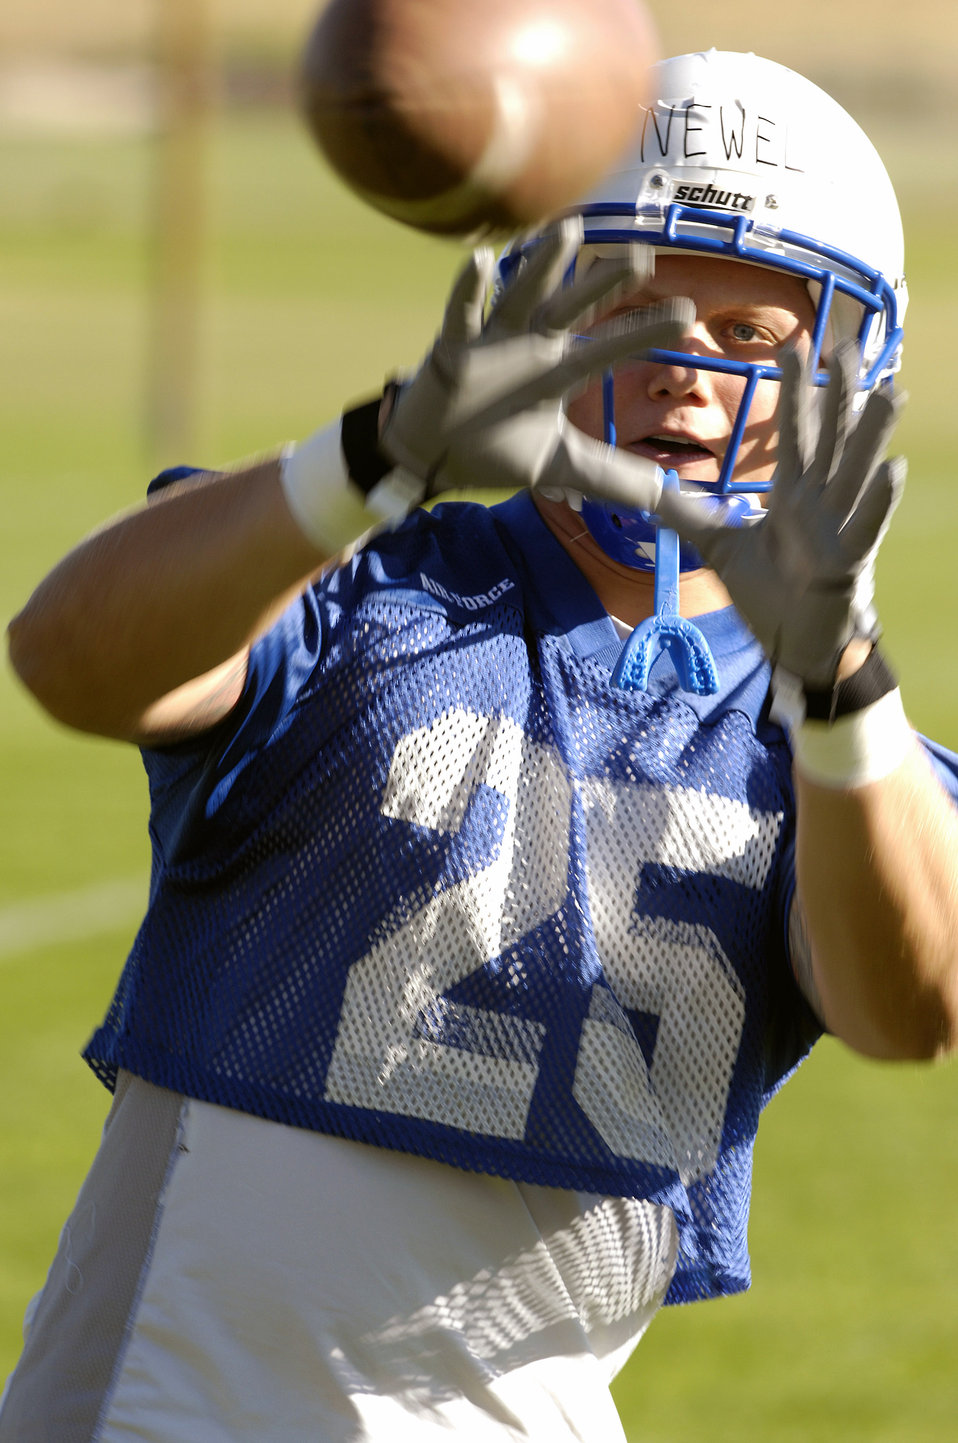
First day of football practice at the Academy

Fullback Cadet 1st Class Todd Newell participates in drills as the Falcons practice in preseason camp July 31 at the U.S. Air Force Academy in Colorado. The Falcons had their best Mountain West Conference record in school history in 2007 with a 9-4 record.